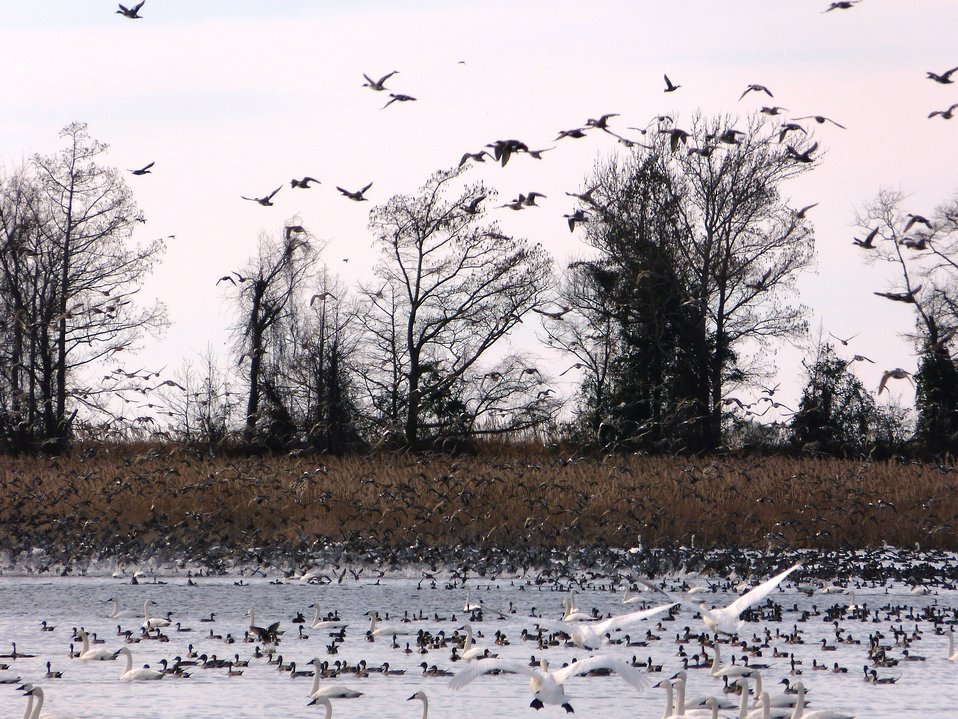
A mixed flock - 4

At Mattamuskeet National Wildlife Refuge in North Carolina. The Refuge’s prime location along the Atlantic Flyway makes it a vitally important stopover for wintering waterfowl.

In total, the Refuge attracts more than 200,000 ducks, geese and swans from November through February.